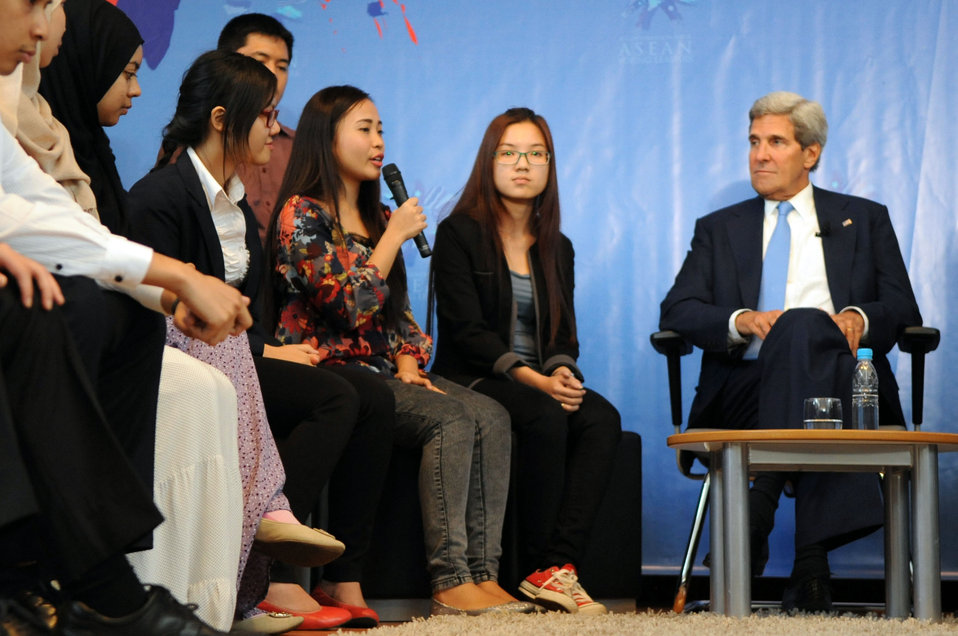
An ASEAN Youth Leader Asks Secretary Kerry a Question

U.S. Secretary of State John Kerry listens to a student from the Philippines speak to him during a Youth Leaders meeting in Bandar Seri Begawan, Brunei, before the U.S.-ASEAN Summit meeting begins on October 9, 2013.